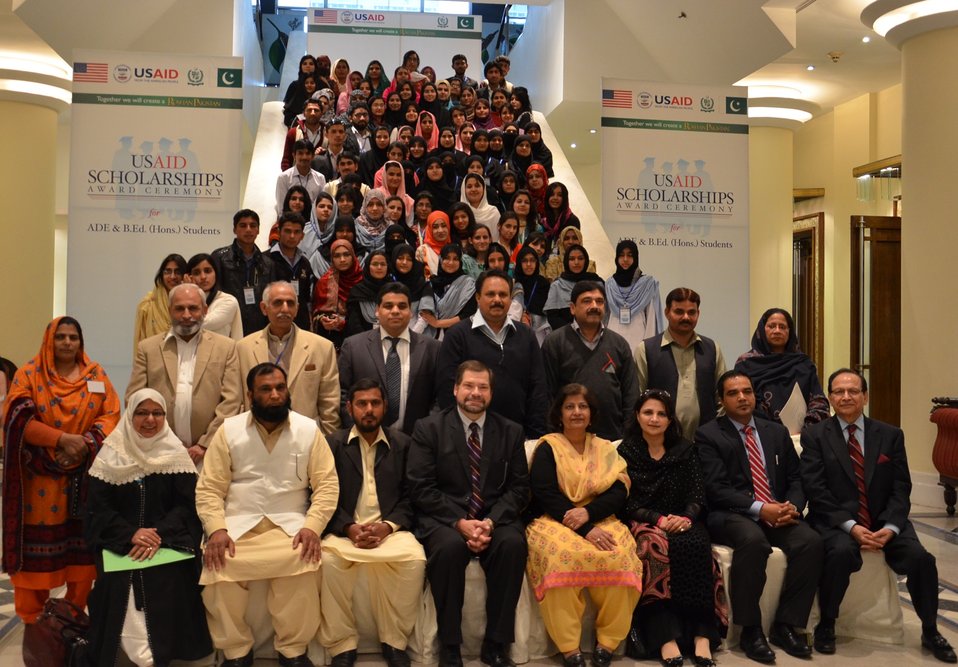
Group photograph of scholarship recipients